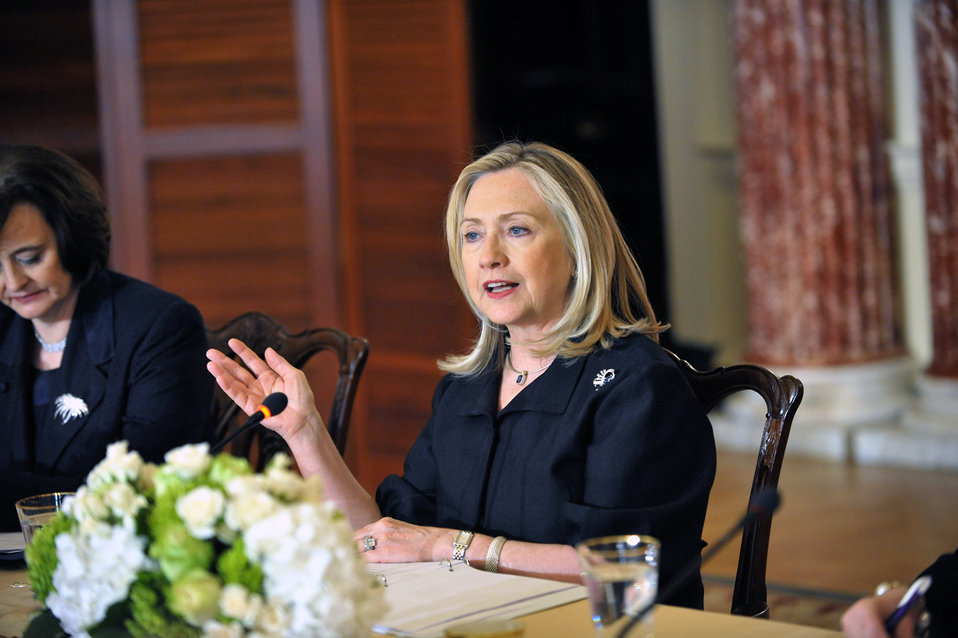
Secretary Clinton Hosts Inaugural Meeting of International Council on Women's Business Leadership

U.S. Secretary of State Hillary Rodham Clinton hosts the inaugural meeting of the International Council on Women's Business Leadership at the U.S. Department of State in Washington, D.C., on January 24, 2012.